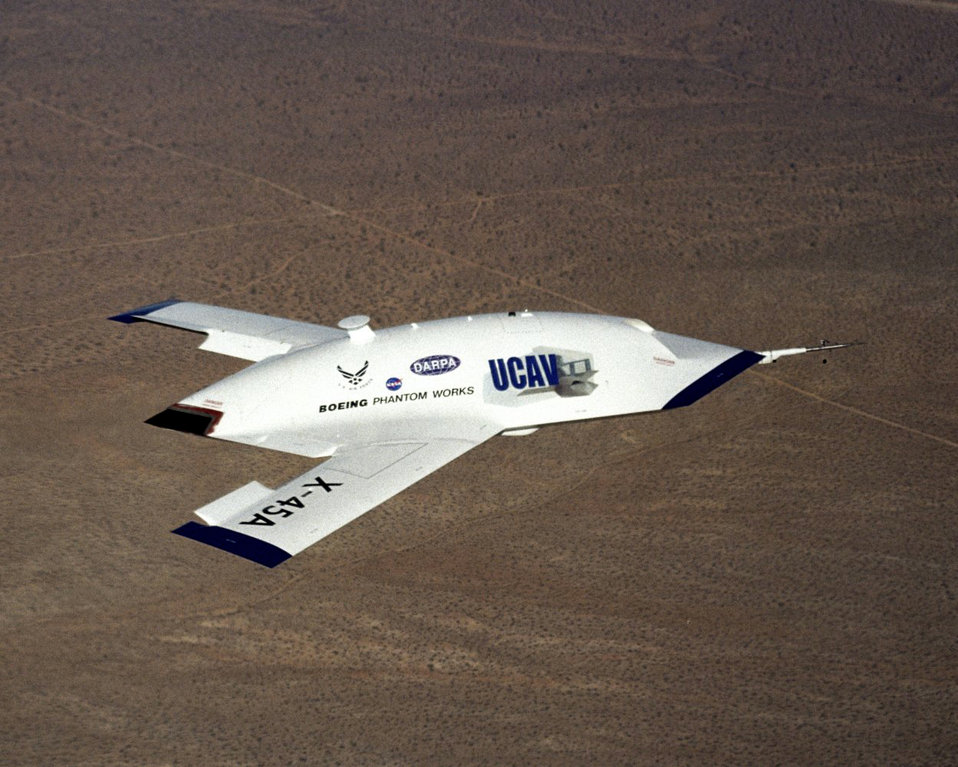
'Line of Sight' test brings out tactical side of X-45A

OVER EDWARDS AIR FORCE BASE, Calif. -- An X-45A soars here during a flight to test software upgrades. The joint-unmanned-combat-air-systems test team demonstrated a transfer of command and control using line-of-sight capabilities Jan. 27, showing a tactical side of the aircraft.